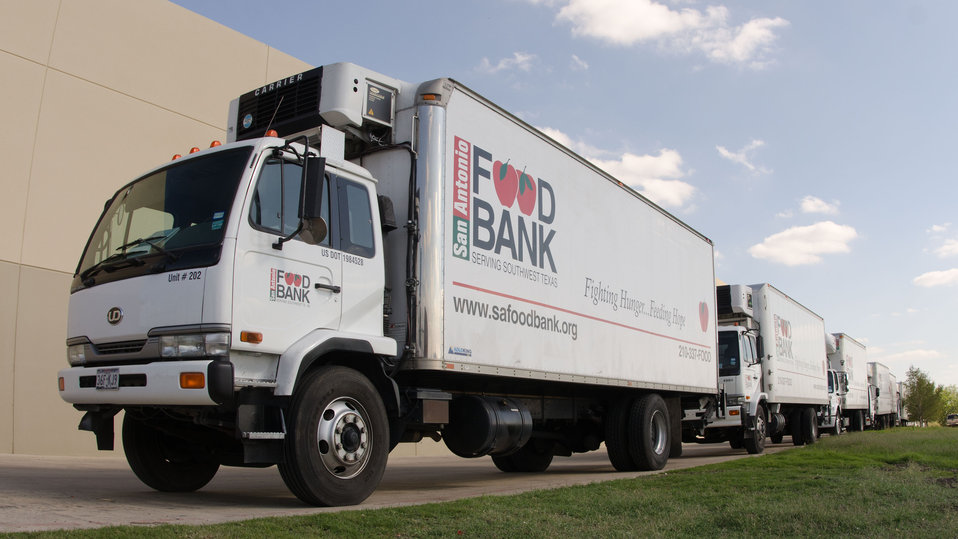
Some of the San Antonio Food Bank (SAFB) fleet of delivery trucks at their San Antonio TX, headquarters facility on Monday, October 31, 2011. One of the uses today was to deliver United States Department of Agriculture (USDA) Commodities Supplemental Food Program (CSFP) canned goods, fruit juices and dry beans to service agencies for distribution to people in need.
SAFB is a non-profit organization that serves as a clearinghouse by receiving and storing truckloads of donated food, produce, and other grocery products in. Their fleet of trucks and tractor trailer rigs support the distribution of '...more than 44 million pounds of food, produce, and grocery products. These products are distributed over 500 human service agencies that help southwest Texans in 16 counties. By partnering with SAFB, these agencies save more than $70 million in food purchase costs. These values represent almost 4.6 million meals per month going to 40,000 poor and hungry families in the San Antonio area,' states SAFB.
“We couldn’t do what we do without our partnership with USDA’” said President and CEO Eric Cooper. He continues, “We are privileged in partnering (with the USDA) to feeding kids, through the summer, with the Summer Food Service Program, and throughout the year, with the Child and Adult Care Feeding Program (CACFP). Then in our approach to feeding seniors, we partner with USDA in the CSFP, and the Senior Farmer’s Market (Nutrition) Program. And then work to bring all our (needy) parties together with our Supplemental Nutrition Assistance Program (SNAP) Outreach. You know, once families have access to food we believe it is important to educate them. Through the support of the SNAP-Education Program we are able to educate them during their time of need. With this comprehensive approach we are really able to get the right food, at the right amount, at the right time, to needy families throughout our community – which allows us to feed the fifty-eight thousand we do, each week.”
SAFB serves 16 counties in Southwest Texas and states, “Nearly one out of every four children and one out of every five adults in Southwest Texas lives in poverty and has difficulty meeting basic nutritional needs.” According to SAFB, sixty-five percent of the people requesting emergency food have children. “Additionally, the senior citizens and those living on a fixed income generally have limited funds for a consistent grocery budget.”
San Antonio is the seventh largest city in the nation with surrounding farms and ranches near its rivers and water supplies. When available they provide fresh surplus produce. Other commodities come from the food industry and manufacturers. The major food brand companies that for various reasons have surplus commodities donate it to SAFB.
The United States Department of Agriculture donates commodities through programs such as The Emergency Food Assistance Program (TEFAP), while Texas farmers supply fresh produce to their Fresh Produce Program.
Public donations come in the form of money, food, volunteer time, and advocacy.